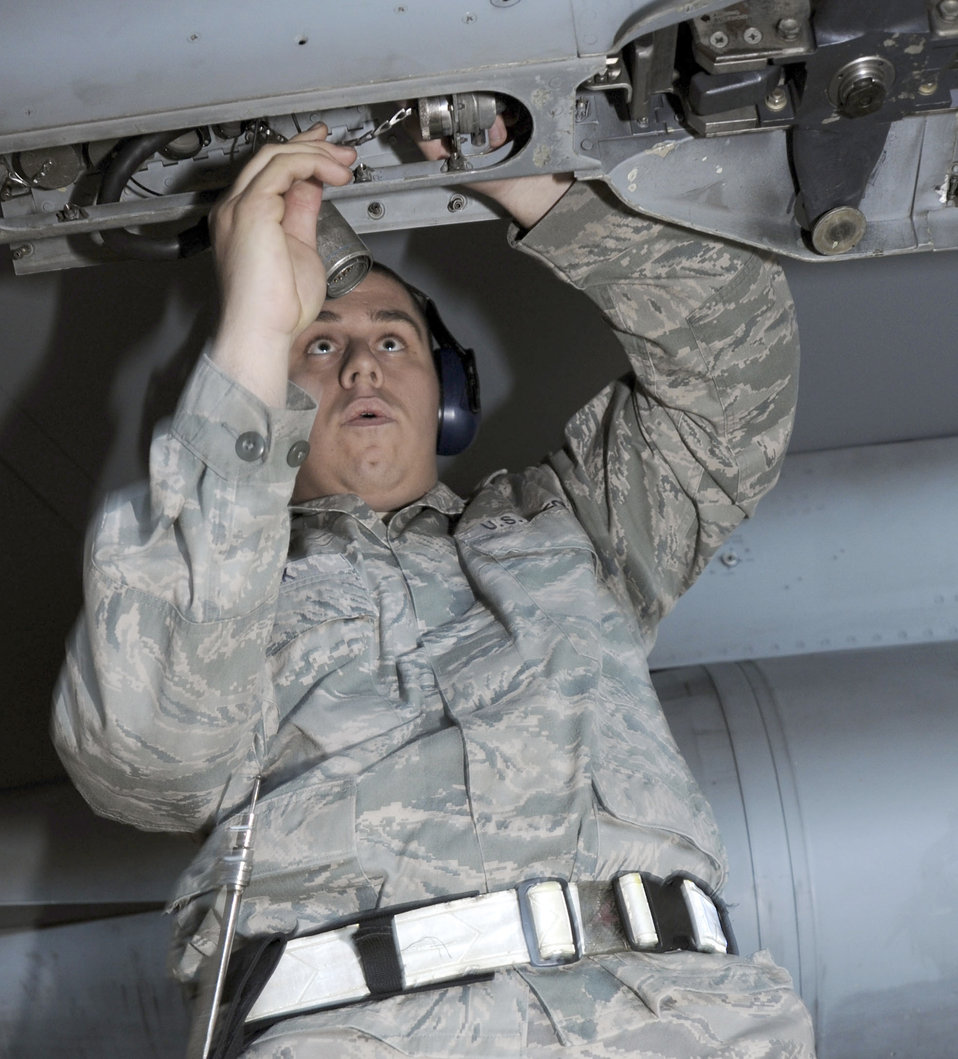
Load crew competition

Airman 1st Class David Gondek competes in the wing load crew competition at Misawa Air Base, Japan, Dec. 17, 2010. Airman Gondek installed an interface cable to munitions on the jet's bomb rack. Load crew competitions increase efficiency and build a sense of camaraderie within the unit. Airman Gondek is a weapons load specialist with the 35th Maintenance Squadron.